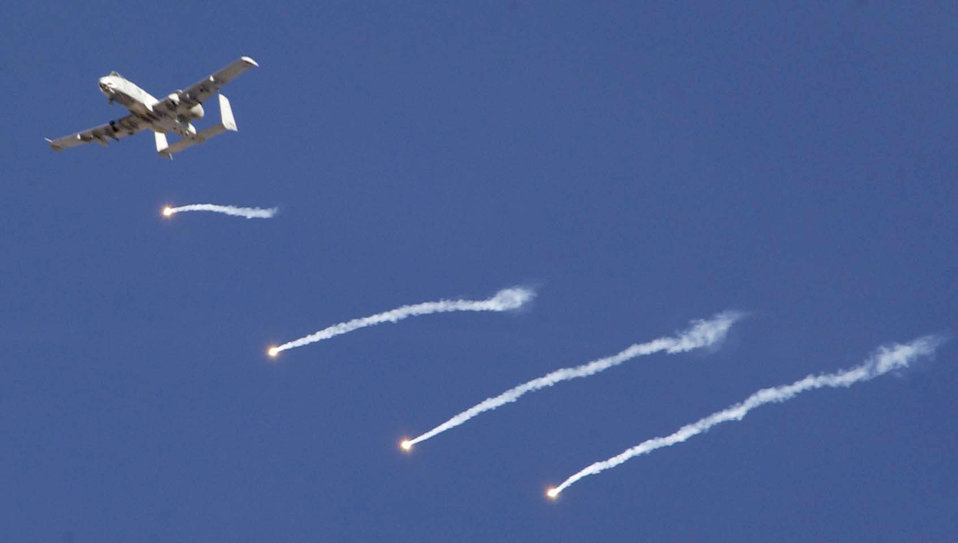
'Cyclone' over Iraq

KIRKUK, Iraq -- A pilot in an A-10 Thunderbolt II drops a flare over here Nov. 17 during Operation Ivy Cyclone. The operation is a combined-arms operation designed to root out and crush insurgents in Iraq. The aircraft is from the 74th Fighter Squadron at Pope Air Force Base, N.C.